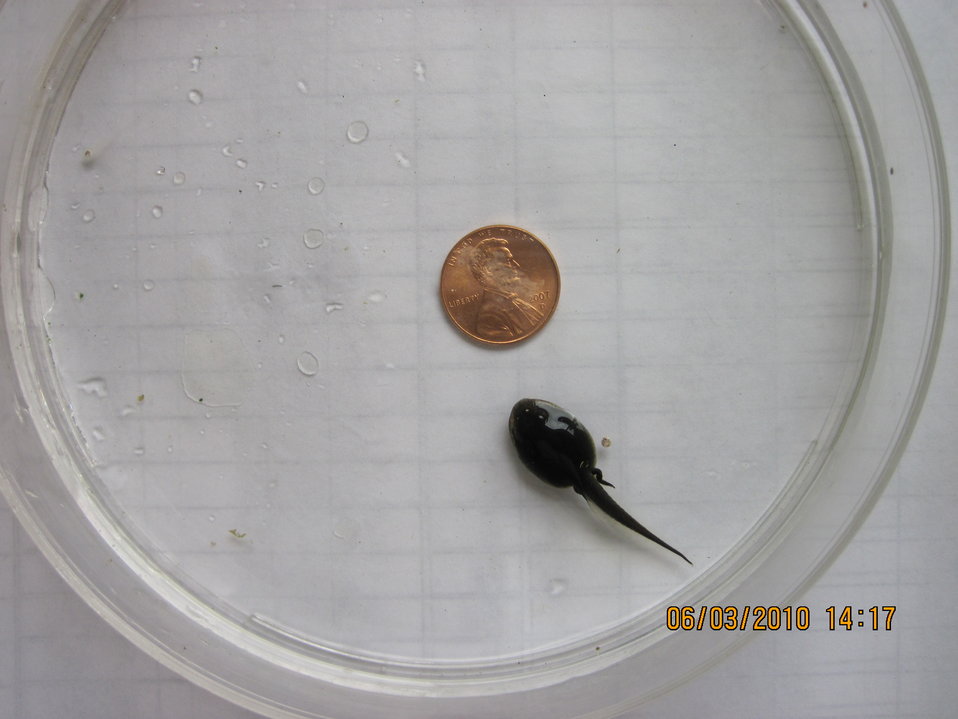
Wyoming Tadpole

The hatchery maintains a captive population for breeding, rearing, and refugia, and progeny from this program will be used for reintroduction efforts.